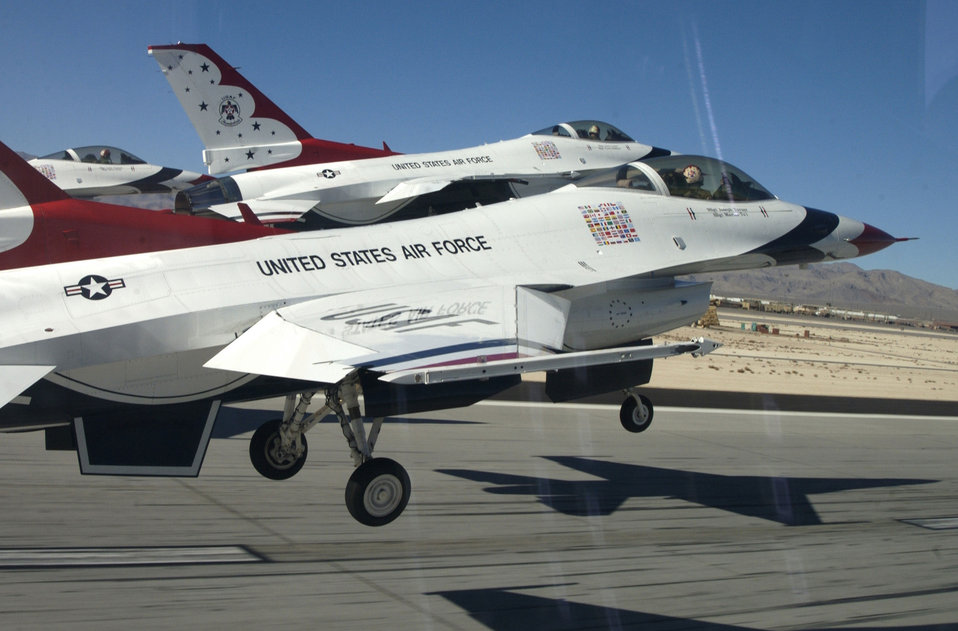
Slot shot

NELLIS AIR FORCE BASE, Nev. -- A view of the Thunderbirds from the slot position during the famed diamond takeoff.